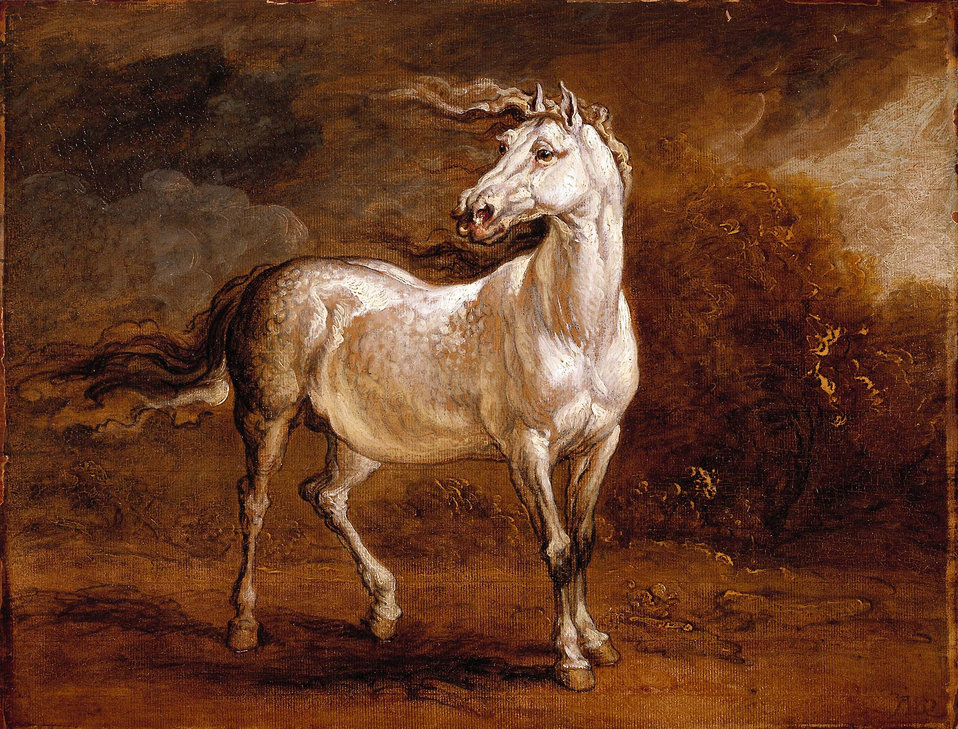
A Cossack Horse in a Landscape by James Ward, RA